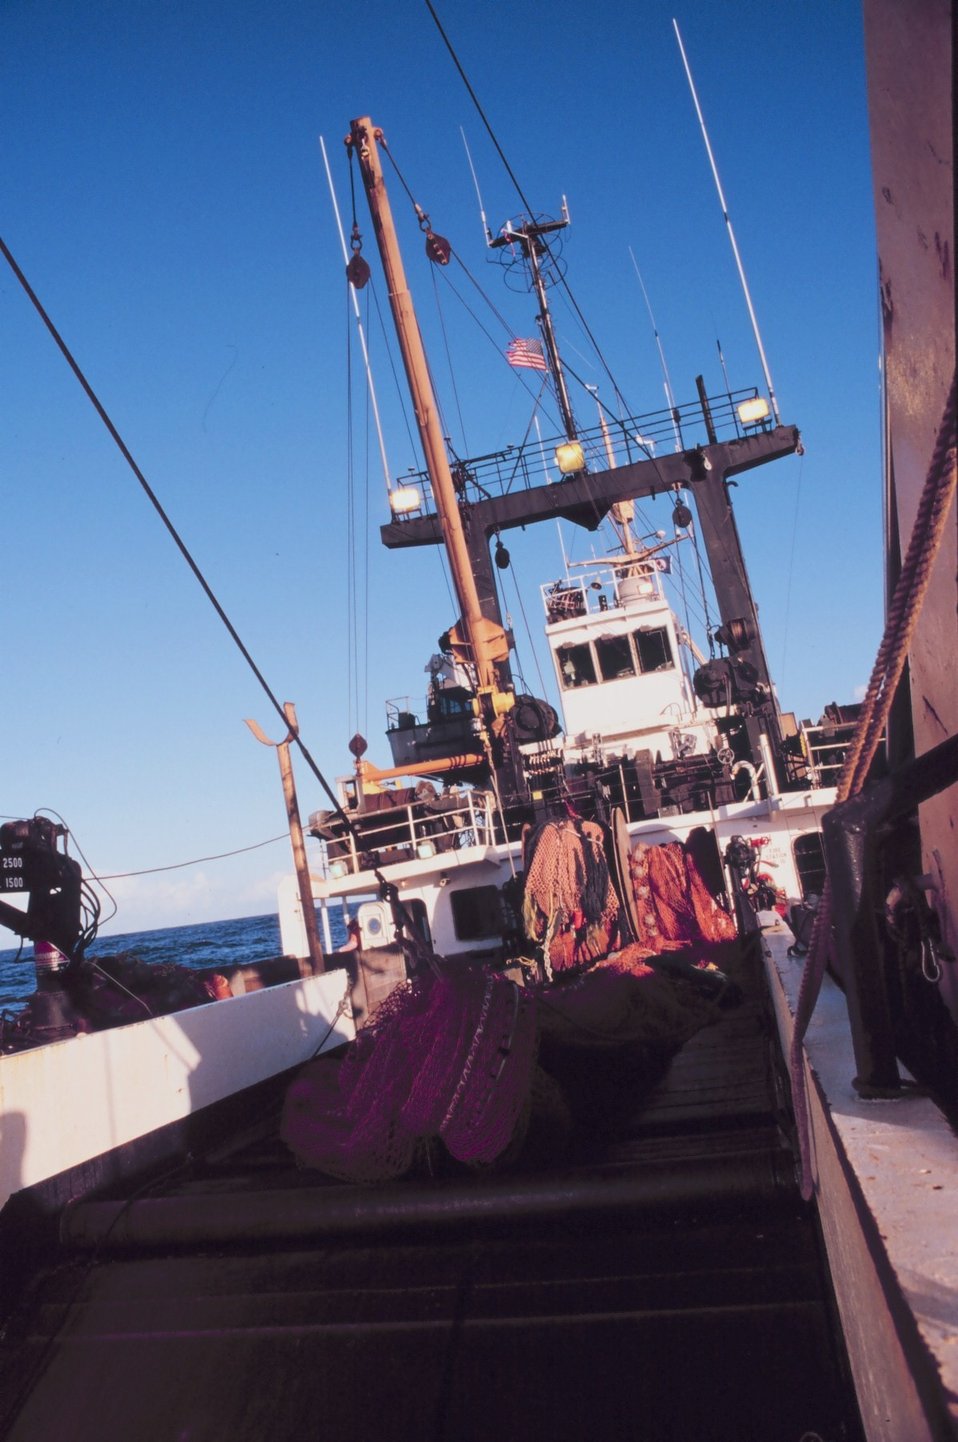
Trawling operations on the MILLER FREEMAN. Getting ready to deploy the trawl.